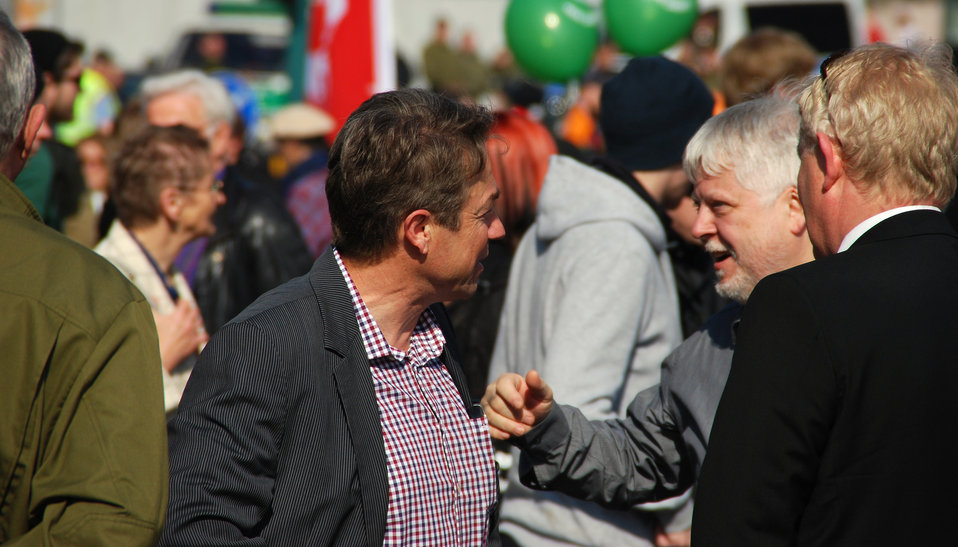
Proteste gegen den Nazi-Aufmarsch am 24.3.2012 in Frankfurt (Oder), mit Helmuth Markov, Finanzminister des Landes Brandenburg und Günter Baaske, Minister für Arbeit, Soziales, Frauen und Familie des Landes Brandenburg